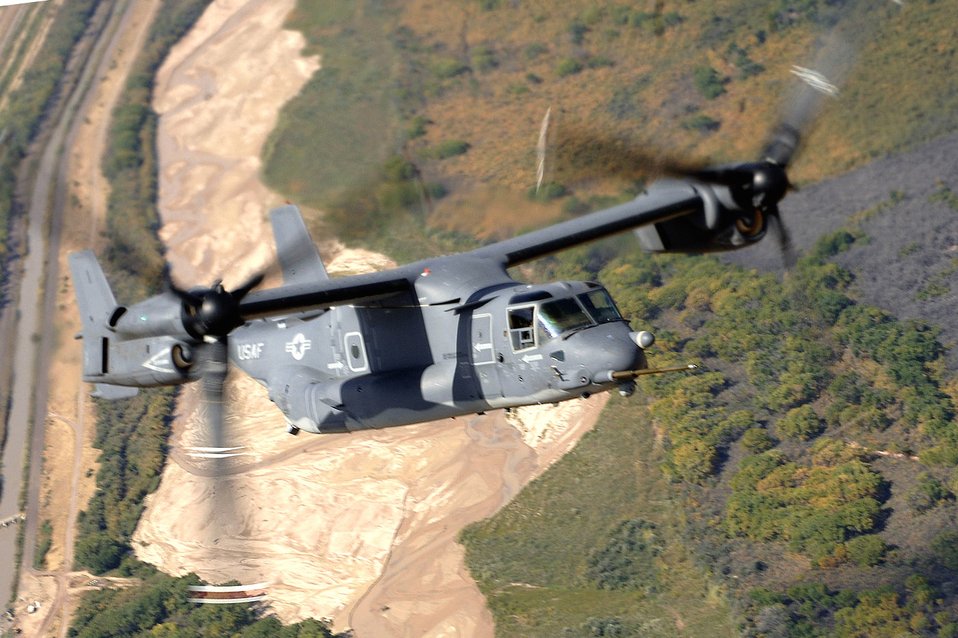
Osprey soars

A CV-22 Osprey soars during an air refueling mission over New Mexico, Oct. 5.